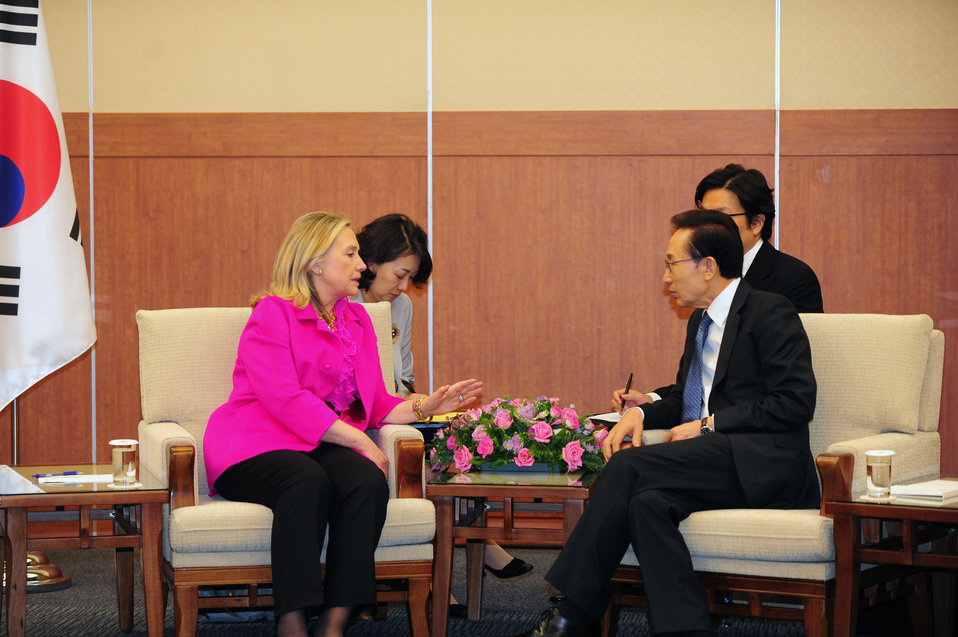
Secretary Clinton Meets With South Korean President Lee

U.S. Secretary of State Hillary Rodham Clinton meets with Republic of Korea President Lee Myung-bak in Busan, South Korea, on November 30, 2011.